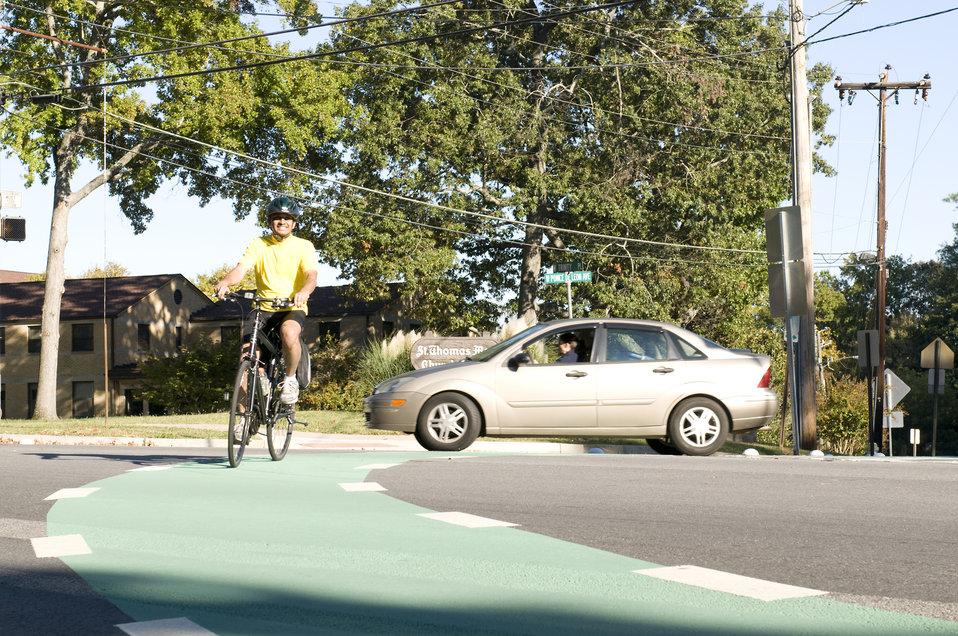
This photograph depicts a smiling male bicyclist, who was riding his bicycle on a sunny Georgia morning. Note the brightly-colored windbreaker he was wearing, which would help drivers see him more easily, as well as the protective, aerodynamic helmet, and the snug leggings, all adding to an overall safer bike ride. Also important, is that he was riding in the designated bicycle traffic lane, and abiding by the proper rules of the road, which govern drivers of both bicycles, and motorized vehicles.